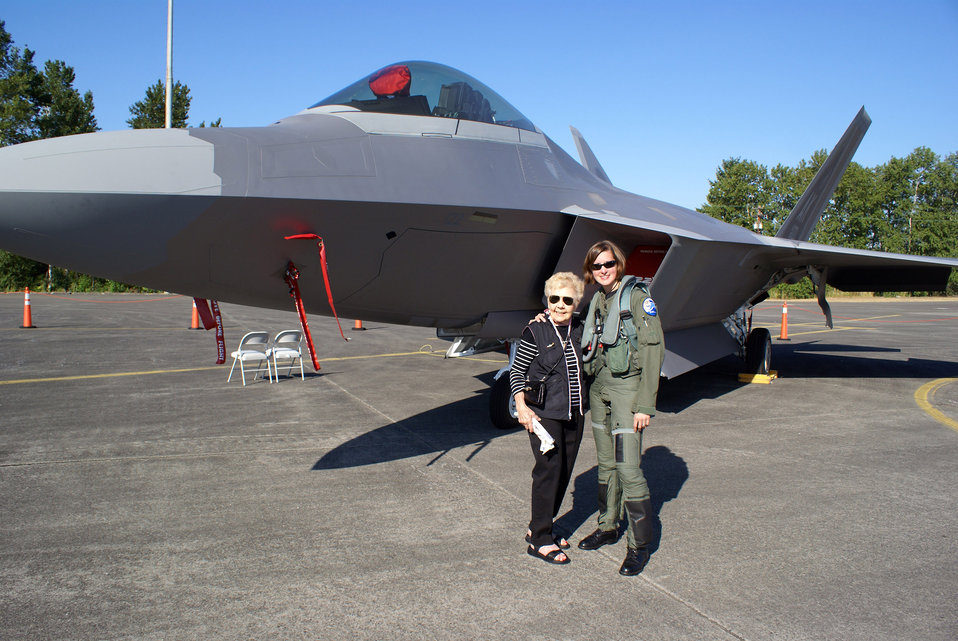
Female pioneers of military aviation gather at McChord

Dorothy Olsen meets with Capt. Jammie Jamieson during the July 20 airshow at McChord Air Force Base, Wash. Captain Jamieson, currently stationed at Elmendorf Air Force Base, Alaska, is the mobility flight commander for the 525th Fighter Squadron. She is the first operational and combat-ready female F-22 Raptor pilot. Ms. Olsen is a former member of the a former Women Airforce Service Pilots.